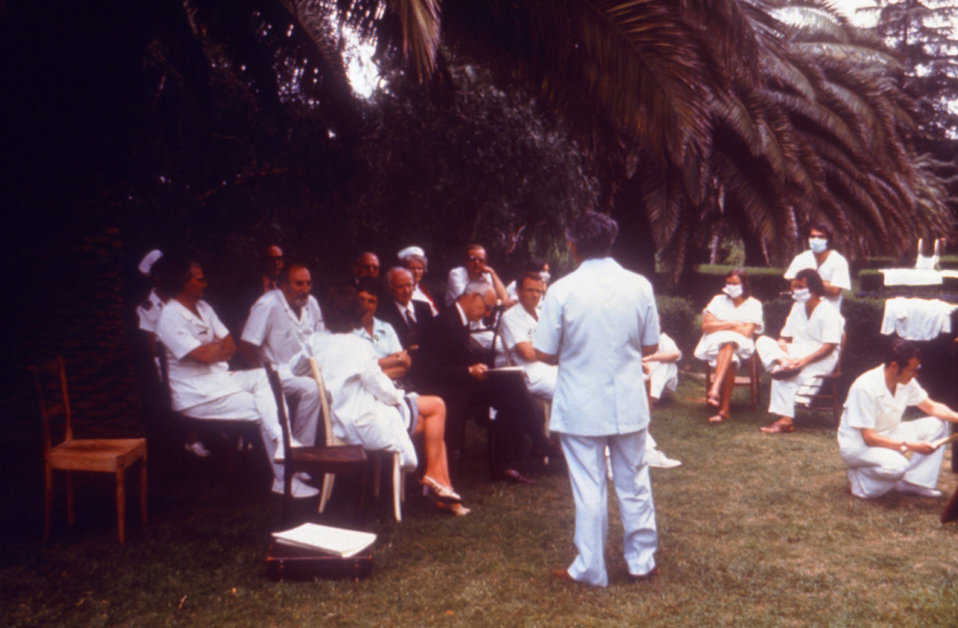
This was an on-site Clinical Pathological Conference that was held during the 1975 South African Marburg investigation.